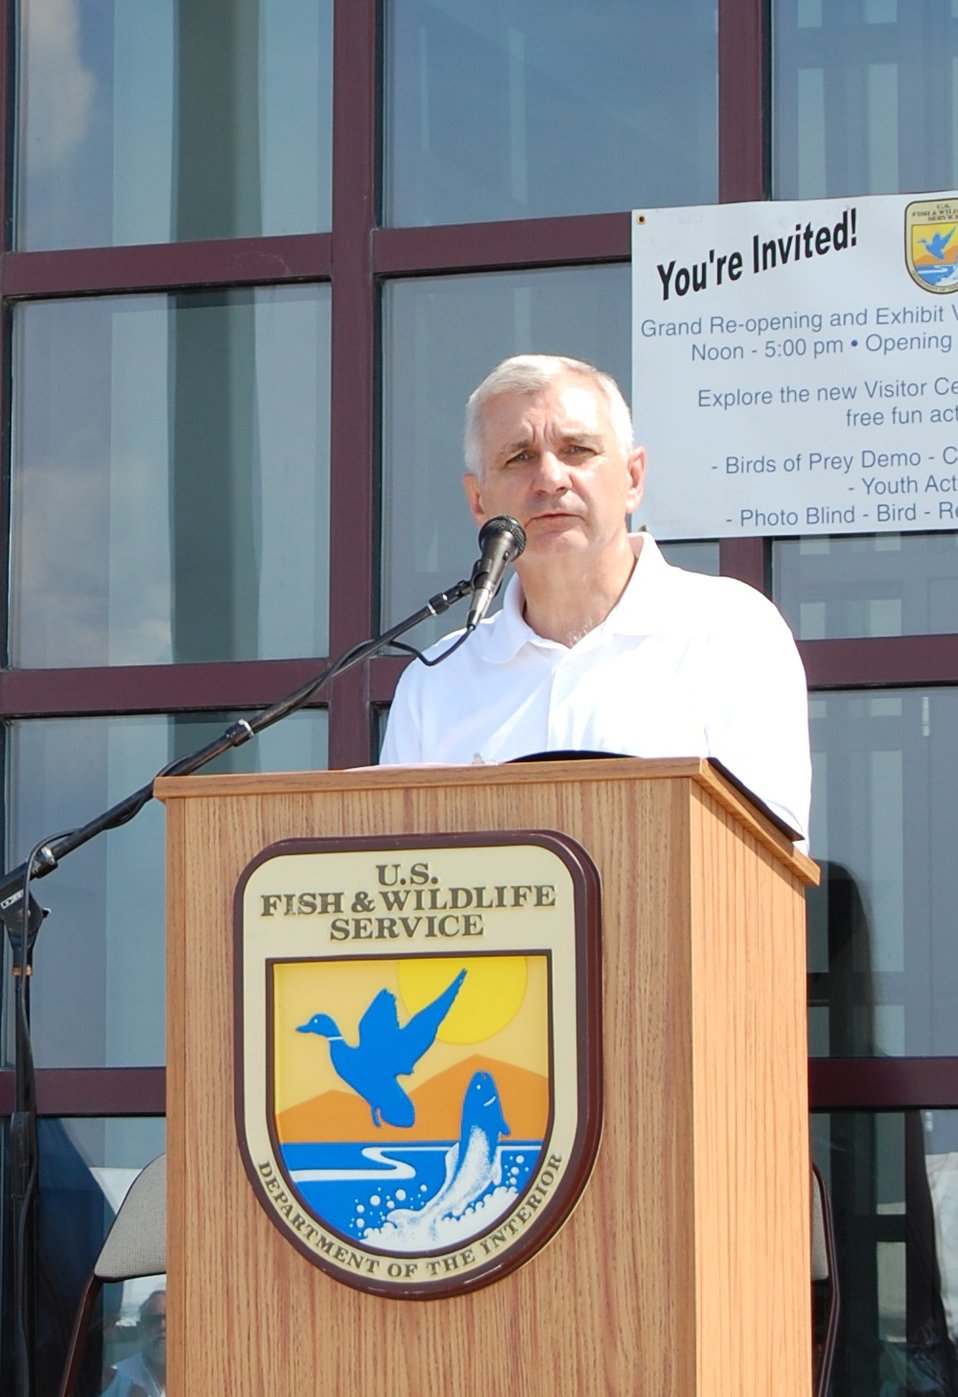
Sen. Jack Reed at the grand re-opening of the visitor center at Sachuest Point National Wildlife Refuge on August 24, 2012.